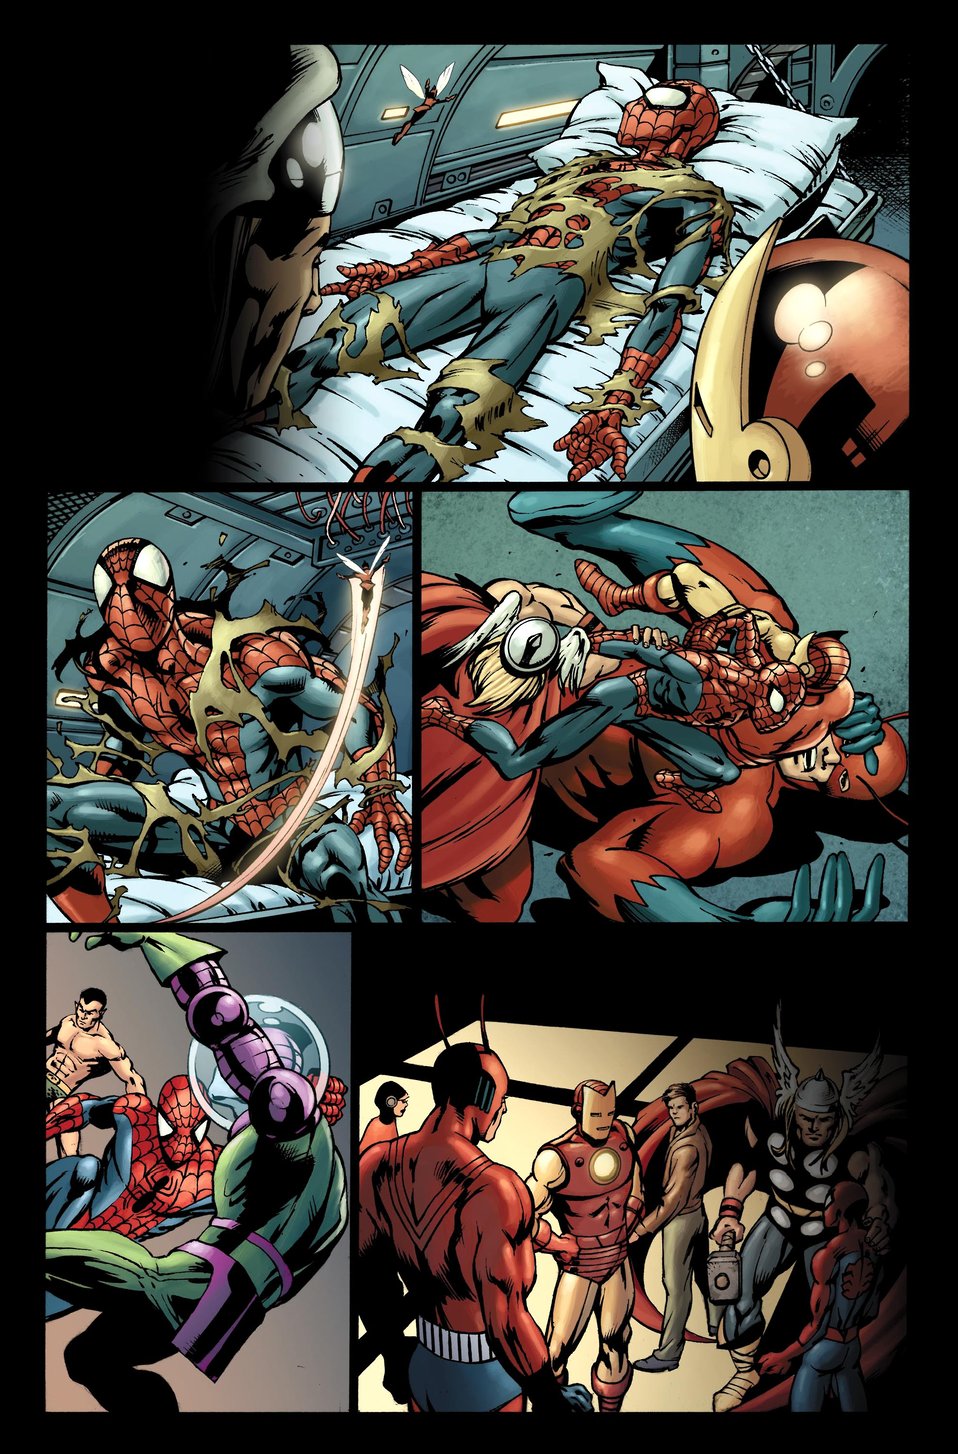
Major creates comic books

A story written by Major Matt Yocum, the assistant air attache at the U.S. Embassy in Tel Aviv, Israel, will be featured in Marvel Comics' 'Giant-Size Avengers Special #1,' which will be release Dec. 26. The story focuses on one of Major Yocum's favorite heroes, Spider-Man, and his early days as part of the New Avengers. This is artwork from that story.